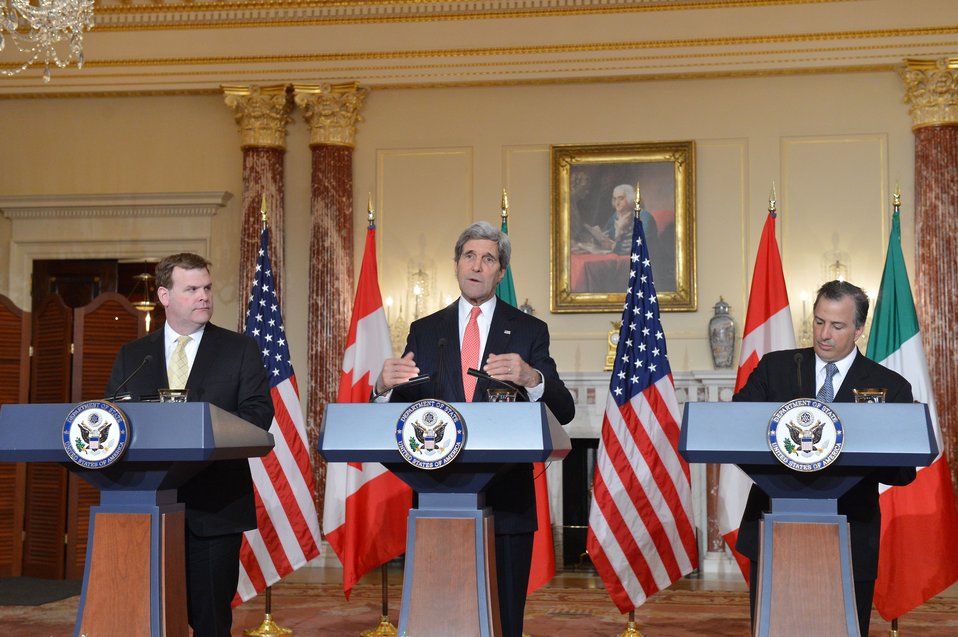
Secretary Kerry, Canadian Foreign Minister Baird, and Mexican Foreign Secretary Meade Address Reporters at the North American Trilateral Ministerial

U.S. Secretary of State John Kerry, Canadian Foreign Minister John Baird, and Mexican Foreign Secretary Jose Antonio Meade address reporters during the North American Trilateral Ministerial at the U.S. Department of State in Washington, D.C., on January 17, 2014.